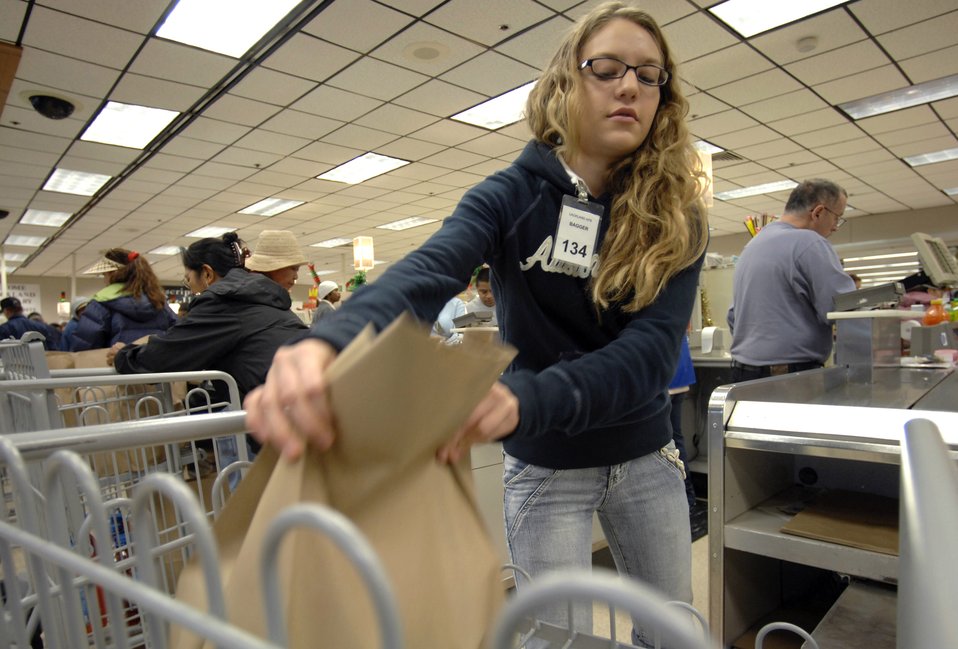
Paper or plastic

Katrina Lopez bags groceries Dec. 20 at the Lackland Air Force Base, Texas, commissary. To help keeps cost down, the Defense Commissary Agency is encouraging patrons to use paper bags rather than plastic bags when shopping for groceries. The cost of paper bags has risen 34 percent and plastic has gone up 84 percent.